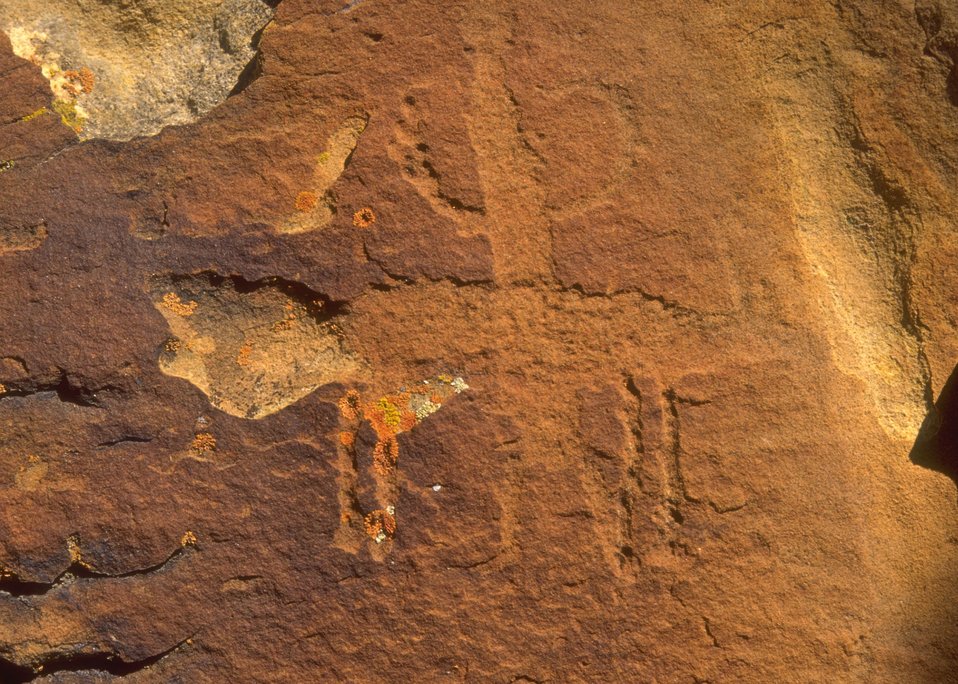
Petroglyph panel in Whoopup Canyon, Newcastle Field Office.